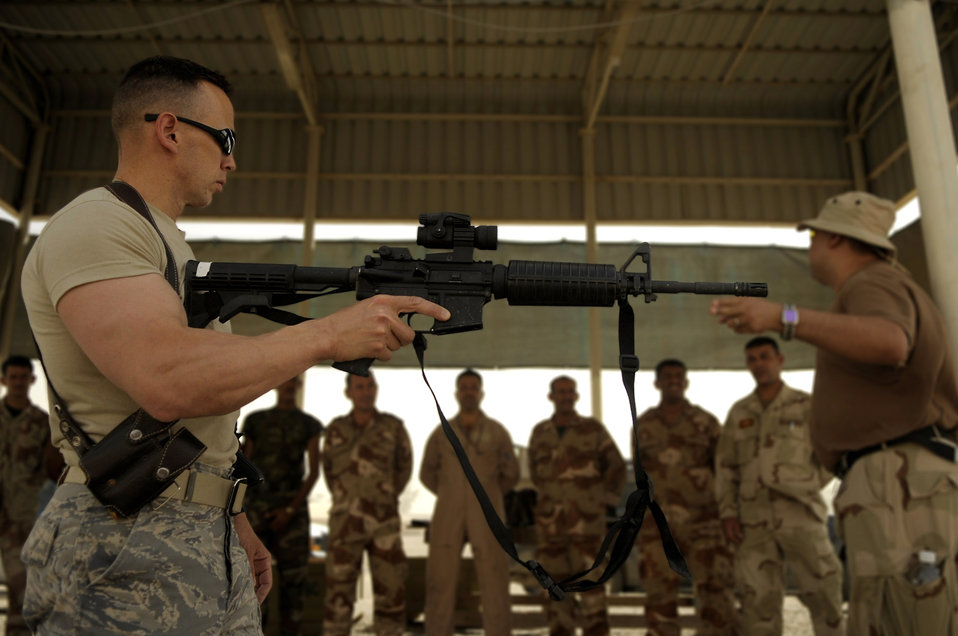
Sather Airmen make each shot count

Master Sgt. Charles Rivera demonstrates the features of the M-4 rifle to a group of Iraqi trainees from New Al Muthana Air Base, Iraq, during training June 18 near Sather Air Base, Iraq. Sergeant Rivera is assigned to the Coalition Air Force Training Team.